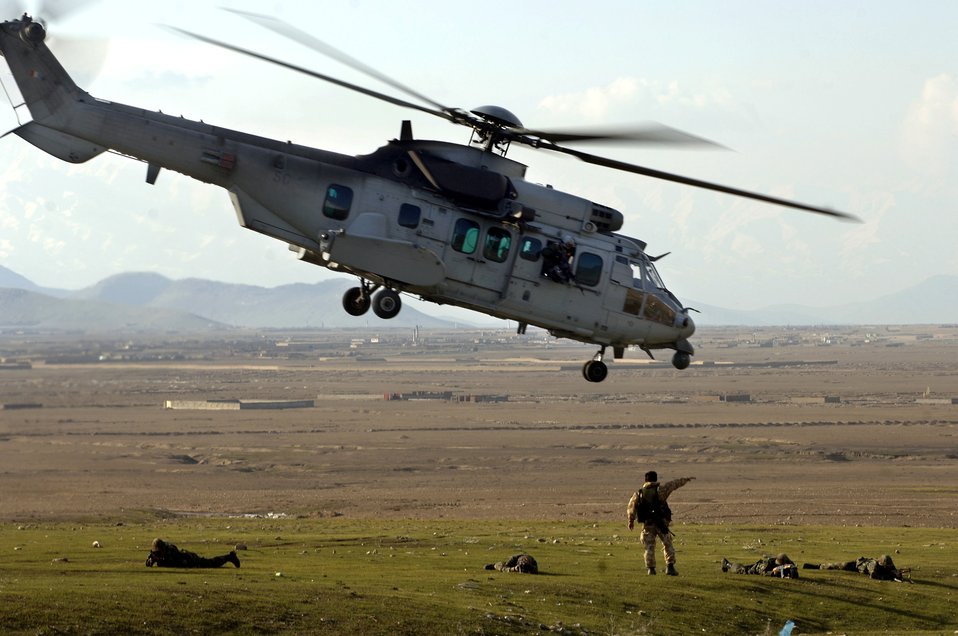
Coalition forces conduct, supervise training exercise

An International Security Assistance Force member signals a French Cougar helicopter at a landing zone March 15 during a medical evacuation exercise being held at the Kabul Military Training Center in Afghanistan. ISAF and DOD members help train ANA officer candidates on practical scenarios such as IED attacks, self-aid and buddy care and patient evacuation.